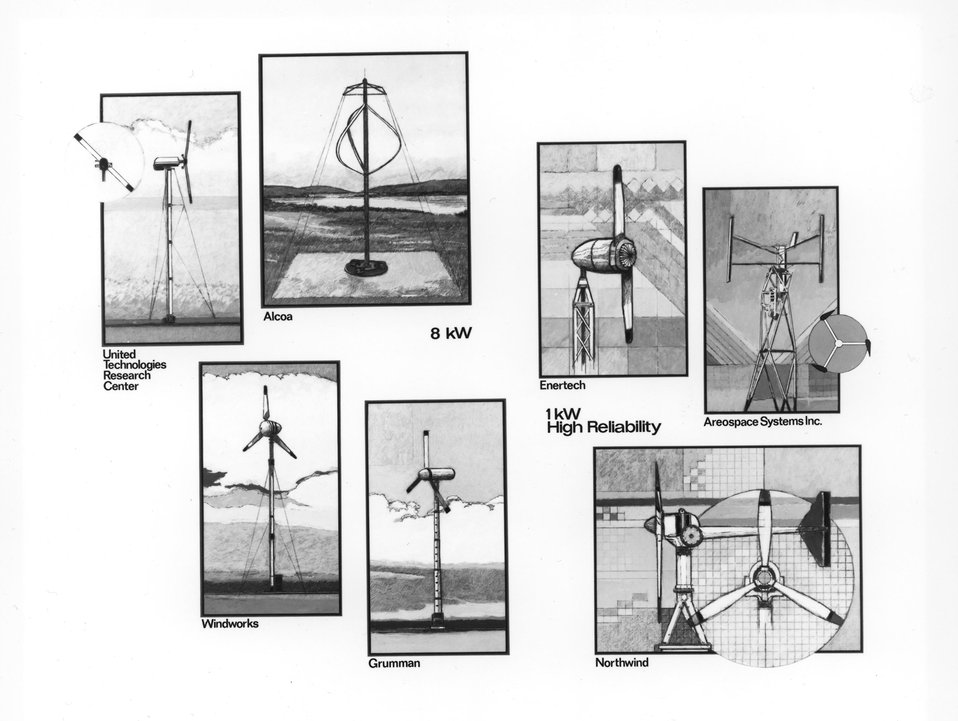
Prototype small wind energy conversions systems are being designed and built by seven U.S. companies for the Department of Energy. c. 1978